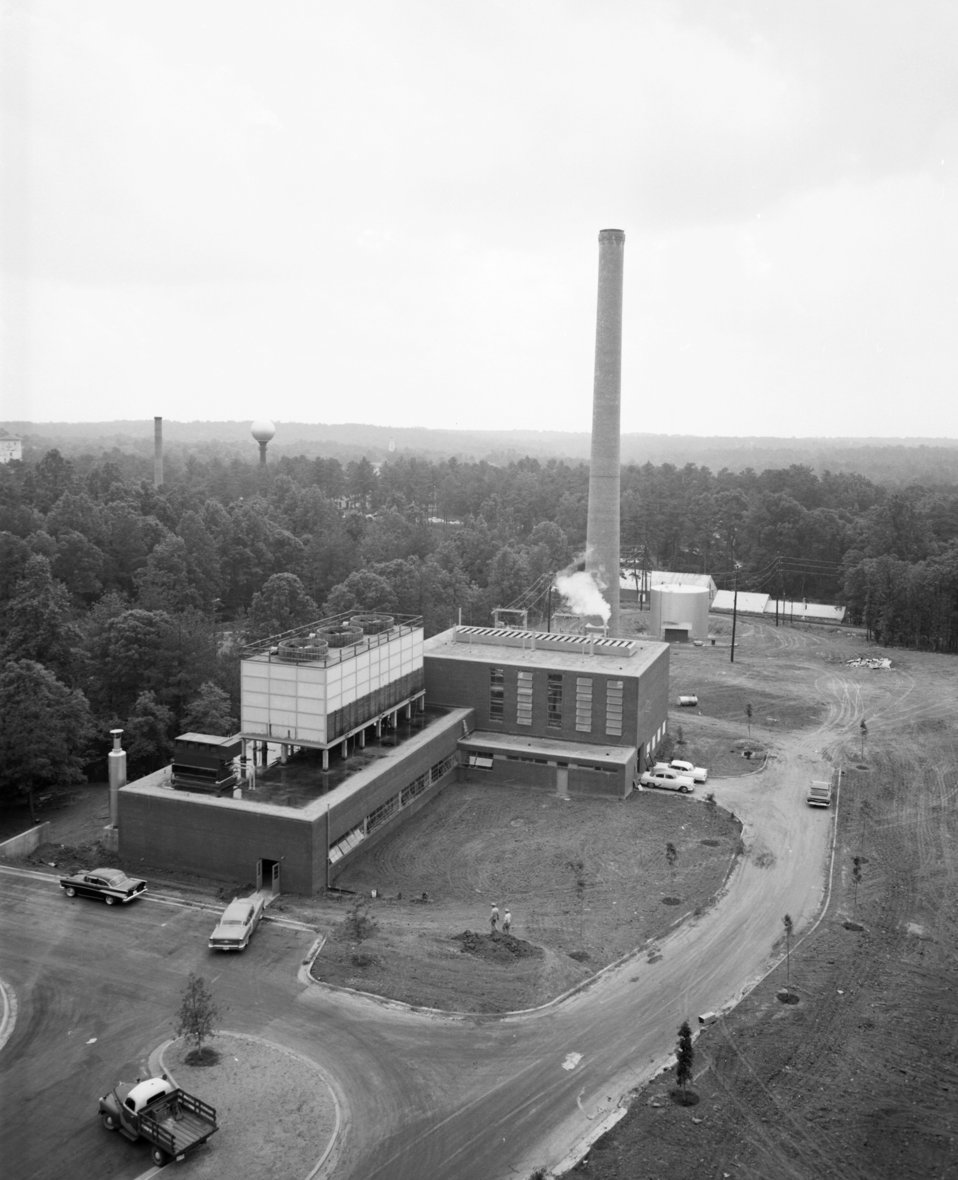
Aerial view of the CDC, Clifton Road campus during construction in 1960, looking Southwest towards Bldg. 10.